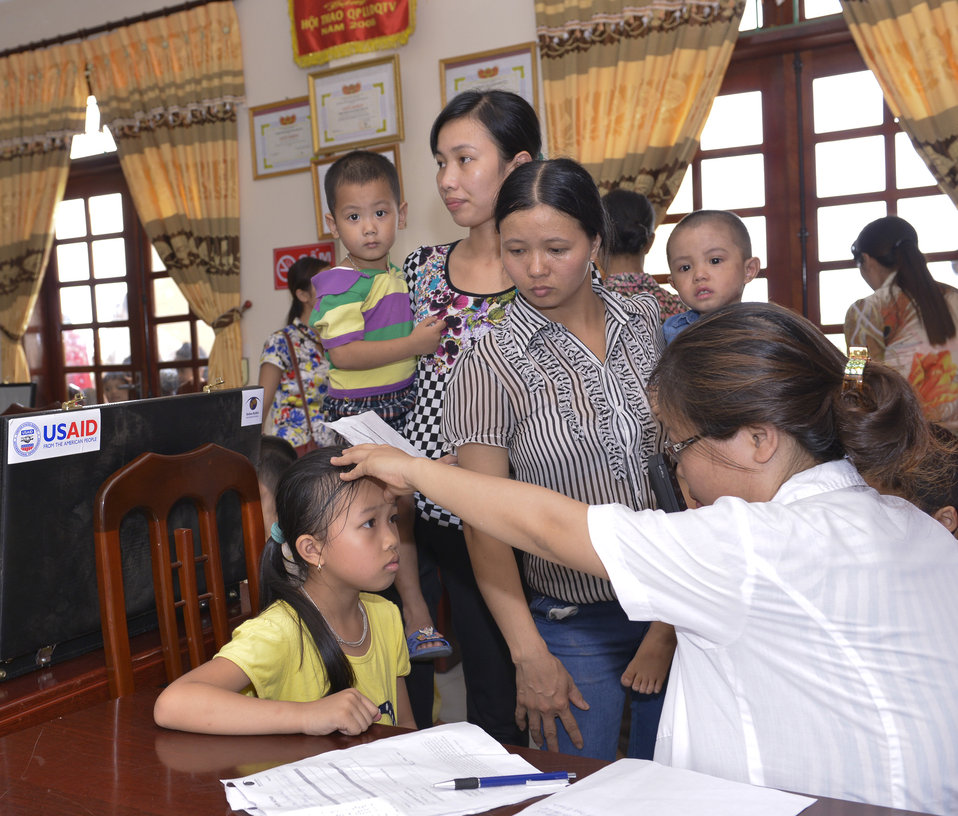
Eye screening for kindergarten children in Quoc Oai district of Hanoi

Quoc Oai, Hanoi. May 31, 2014.